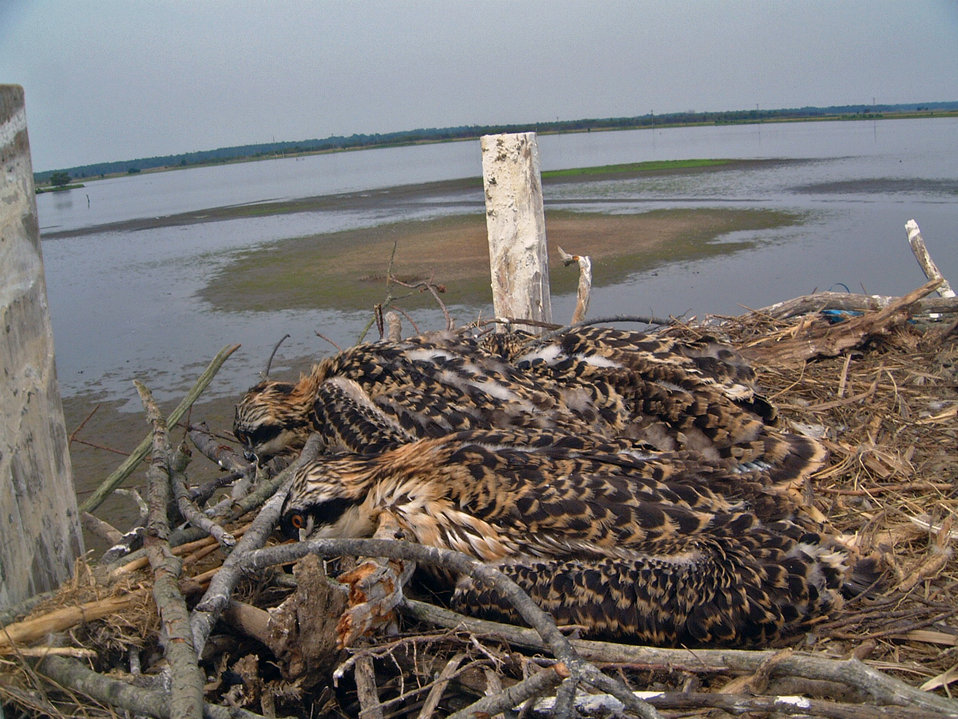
Osprey

Ospreys in their nest at Prime Hook National Wildlife Refuge.